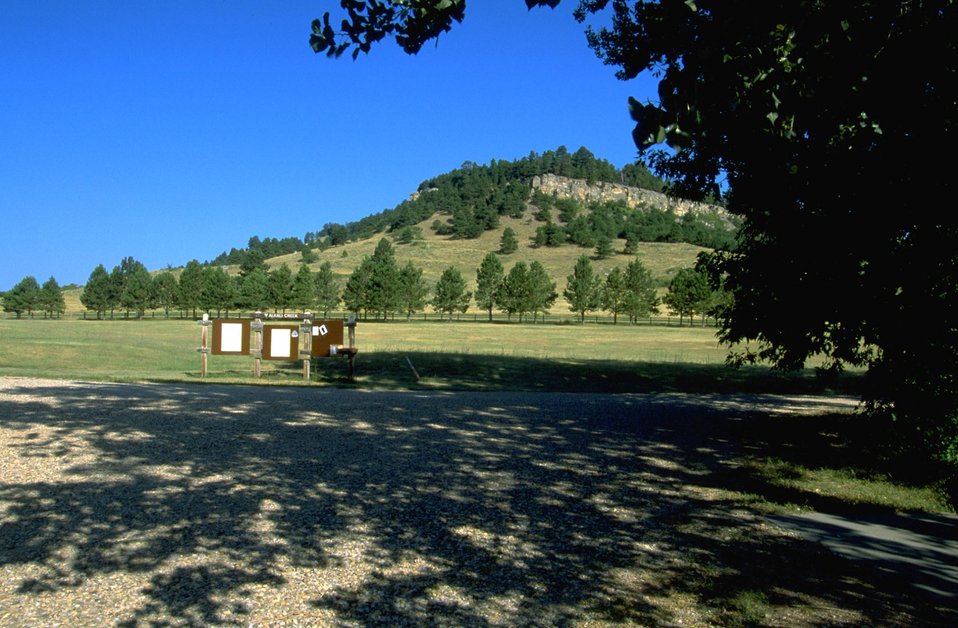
Alkali Creek Trailhead with signs looking north at the south end of Fort Meade